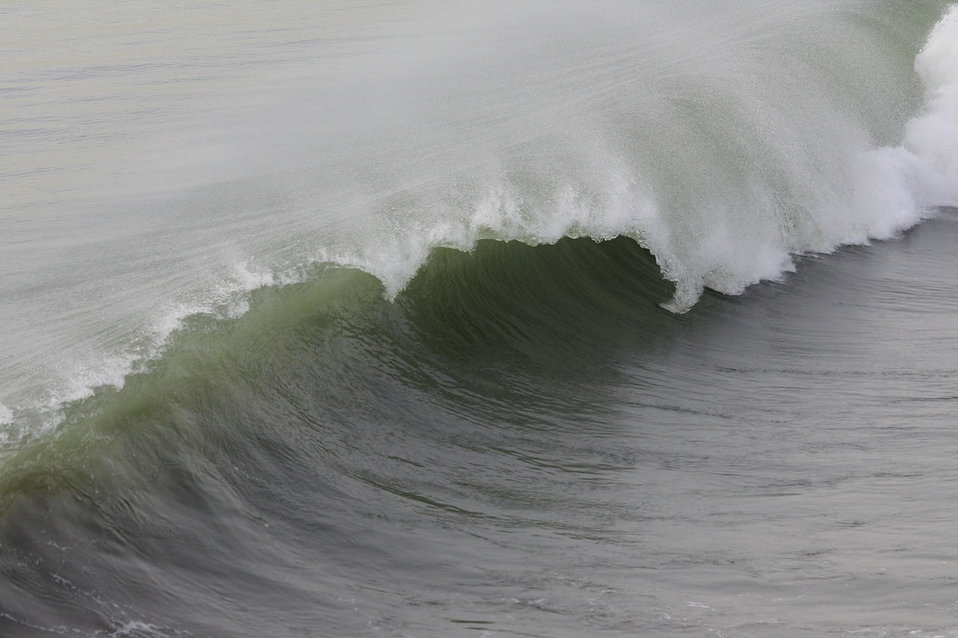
Breaking wave with a nice curl and wind spray, probably 4-5 feet high, on the north side of huntington beach pier.